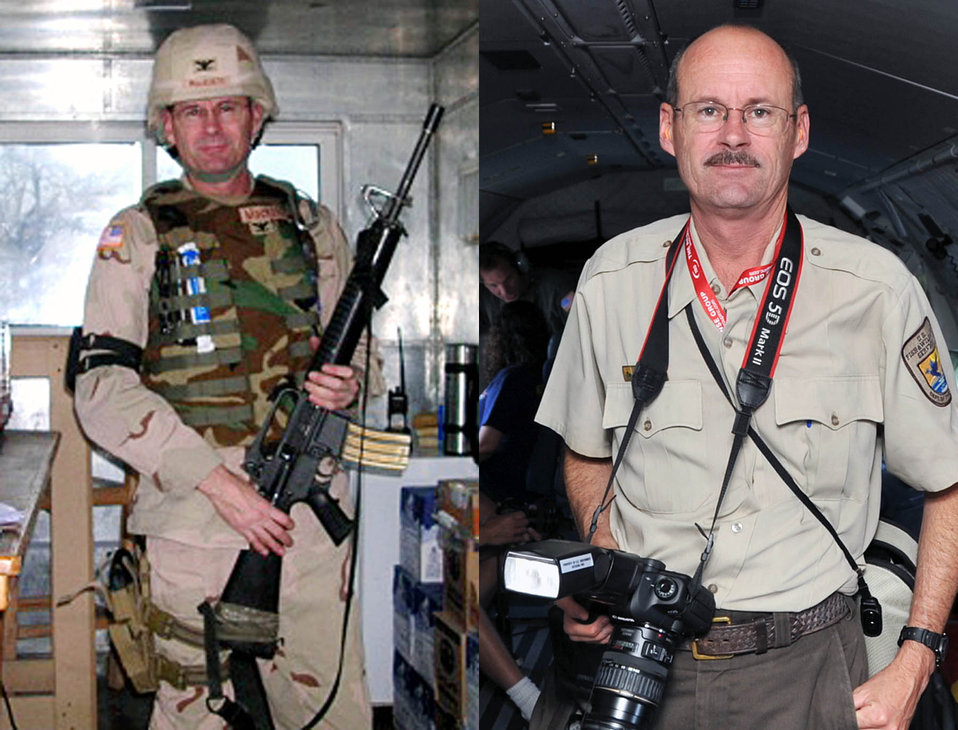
Tom MacKenzie, External Affairs, Atlanta . Colonel, U.S. Army Reserves.
Tom MacKenzie entered the U.S. Army in 1978 serving as an Armor Officer in Kentucky, West Germany, and New Mexico. He continued his military service in the Army Reserves, serving in operations, public affairs, and exercise positions with the 91st Division (Exercise), Forces Command Augmentation unit, Joint Forces Augmentation Unit, Combined Forces Command –Afghanistan, and 9th Mission Support Command in Hawaii. He retired as a Colonel, Armor, in the U.S. Army Reserve. .
Band of brothers:.
All five of Tom’s brothers served in either the Marine Corps or the Army. They include:.
1st Lt. Toby Gritz who was killed in Viet Nam in a aircraft collision in his cobra attack helicopter on his second tour,.
John Gritz, who retired as a Colonel in Special Forces, .
Retired Chief Warrant Officer 4 Paul Gritz in Aviation,.
Captain Rock MacKenzie, Infantry, who served five years, .
and Major Bob MacKenzie, Armor, (medically retired). .
Tom has served with the Fish and Wildlife Service since 1998 in External Affairs in Georgia. Prior to coming to us, he conducted public affairs with the U.S. Small Business Administration and the U.S. Army. He has a nephew, Jeff Gritz in 5th Special Forces group who joined after 9/11, rising to the rank of Sgt. First Class. His God daughter and Niece Dawn MacKenzie is an Air Force E-6 in Hawaii helping service members..
CutlinesCOL MacKenzie on Holiday Sentry Duty in Kabul 2004..
Tom MacKenzie, USFWS on a Coast Guard aircraft overflying the Deepwater Horizon oil spill site in 2010.